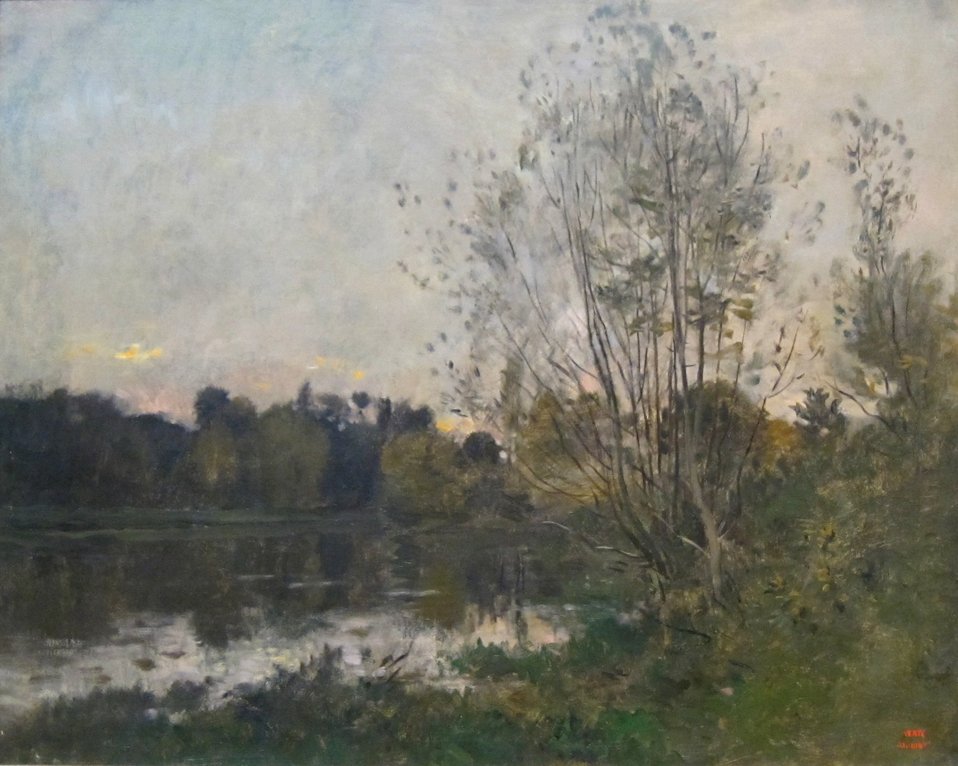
'A Lake in the Woods at Dusk' by Charles-François Daubigny, Dayton Art Institute